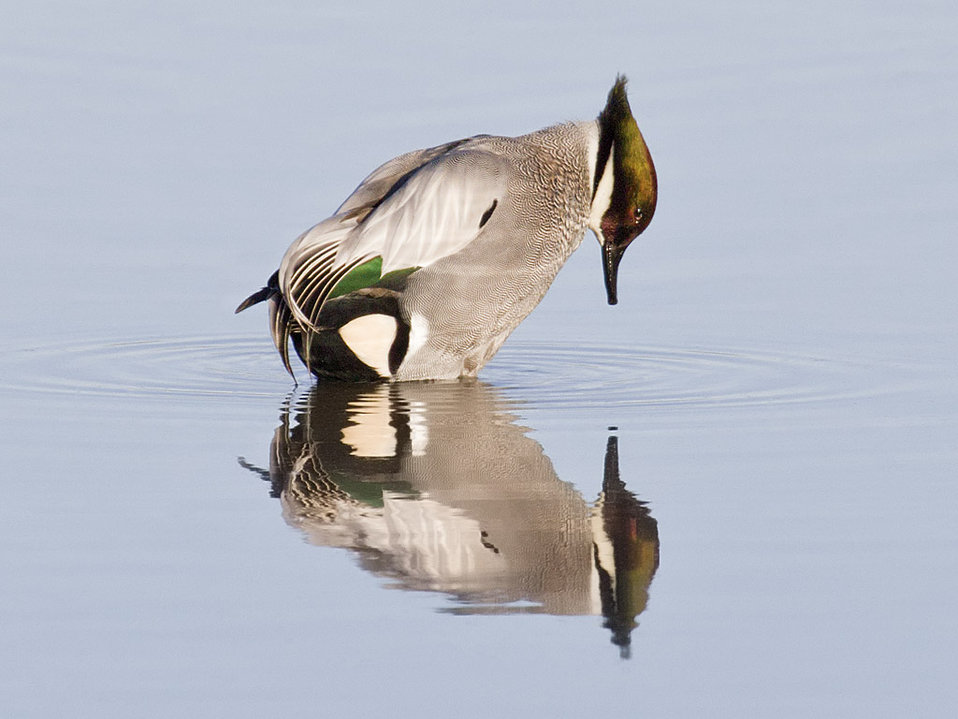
falcated duck

Visitors have come from all over the country to see a rare falcated duck, a 'vagrant' from Asia, that arrived at CA's Colusa National Wildlife Refuge in December.